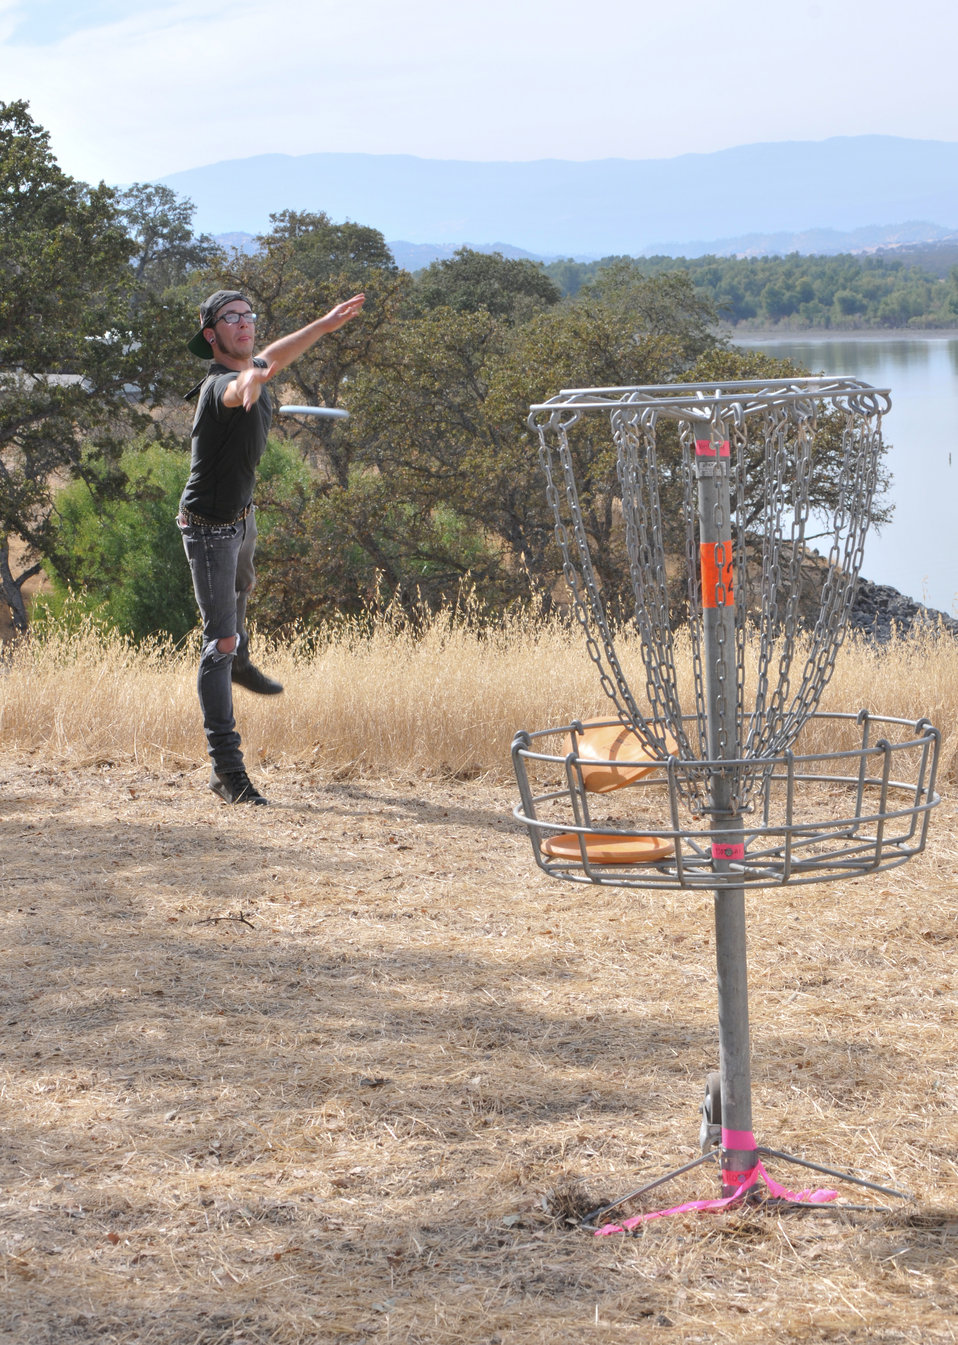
BLACK BUTTE LAKE, Calif. (Oct. 18, 2010) -- A disc golfer putts during the Professional Disc Golf Association's Norcal Series Championships here Oct. 16. The U.S. Army Corps of Engineers Sacramento District’s Black Butte hosted the tournament Oct. 15-17 at its new disc golf course, built on park lands by The Orland Aces disc golf club under a partnership with the Corps. More than 150 disc golfers from as far as Texas competed in the tournament.